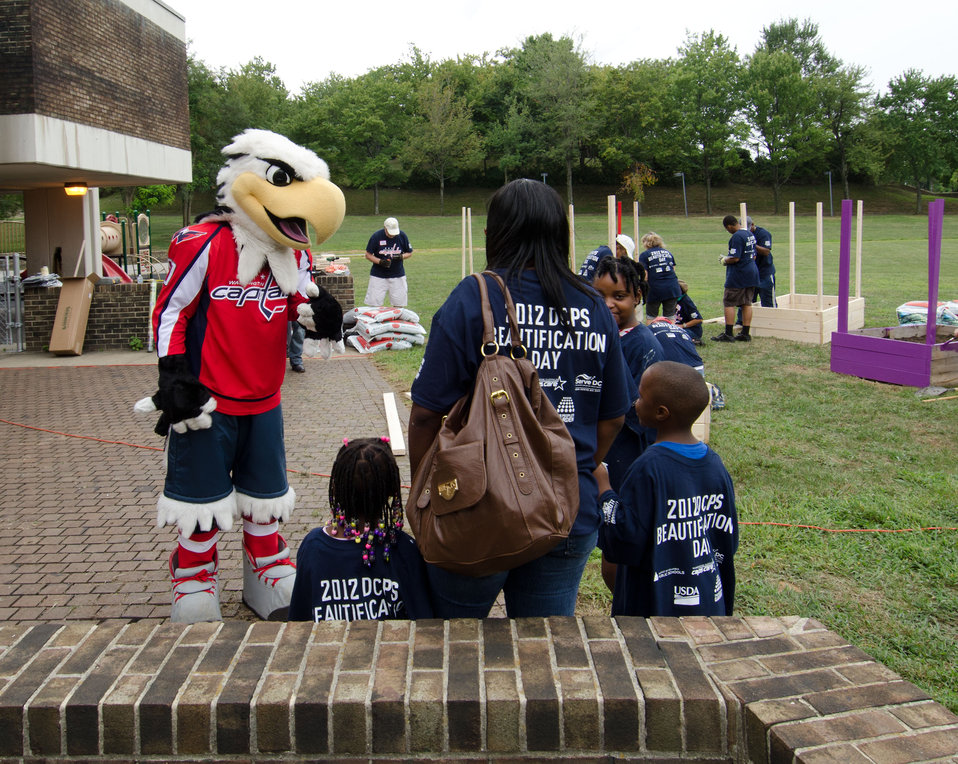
U.S. Department of Agriculture (USDA) People’s Garden Executive Master Gardeners, friends, and family, along with Washington Capitals fans are volunteering in District of Columbia Public Schools’ (DCPS) Beautification Day, on Saturday, August 25, 2012, at Thurgood Marshall Elementary School, in Washington, D.C. Each year people are invited to help “spruce up” public school facilities in preparation for the first day of school. More the 70 volunteers pitched in at this large school facility. The People’s Garden effort involves building and painting raised planter boxes, then preparing the soil mixture so they are “ready to grow.” Additionally, a team that includes descendants of U.S. Supreme Court Justice Thurgood Marshall assembles a prefabricated garden toolshed. The Justice’s son, John Marshall leads the team, which includes Brianna the Justice’s great-grand daughter in one of many multi-generational efforts at this school today. Washington Capitals Forward Mike Riberio, his family and mascot Slapshot participated in every project underway at Marshall School. From the outside gardens, to inside murals, and robotics worktable construction, the teams made their goals.